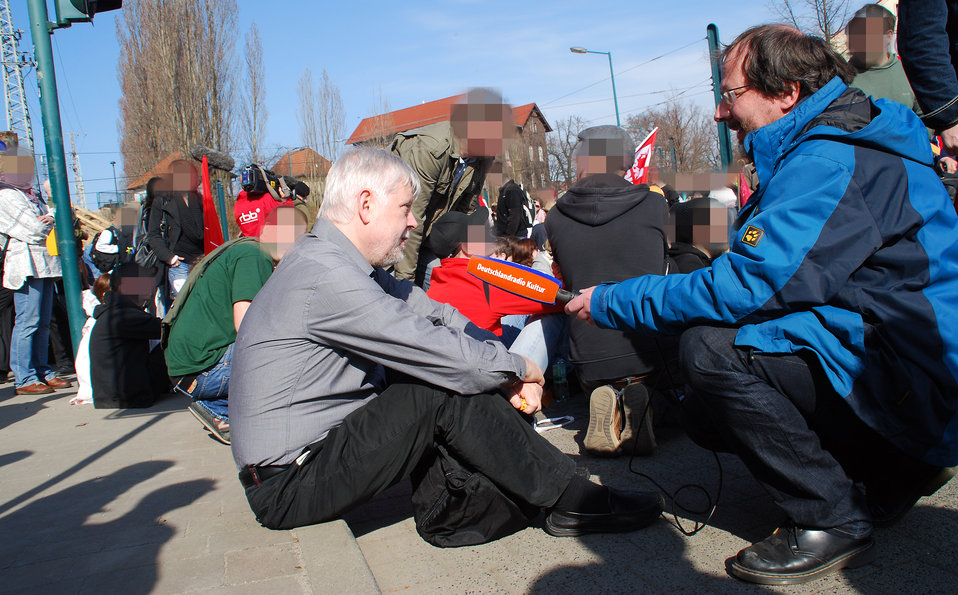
Proteste gegen den Nazi-Aufmarsch am 24.3.2012 in Frankfurt (Oder)